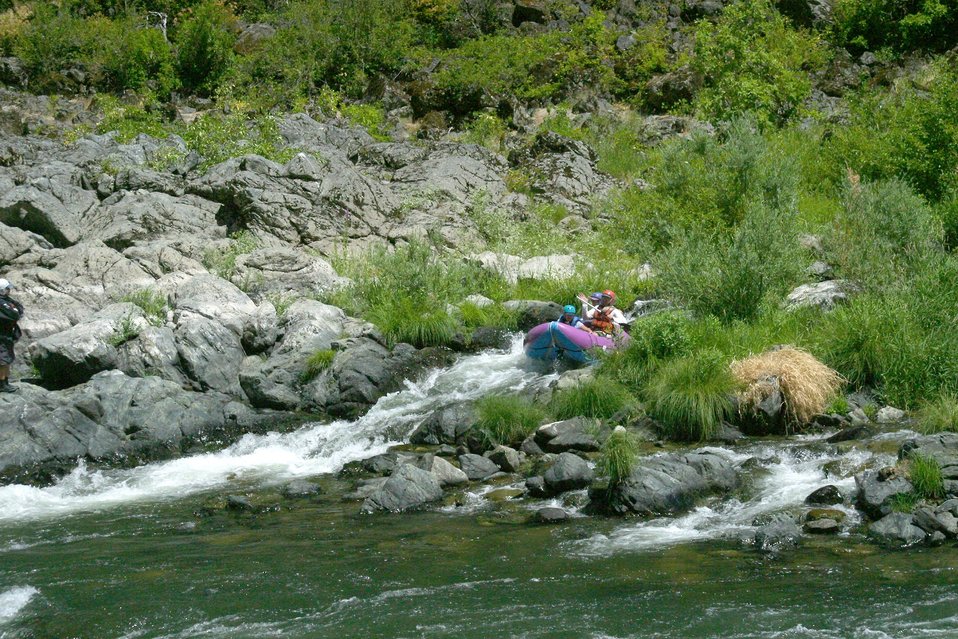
Rainie Falls Fish Ladder